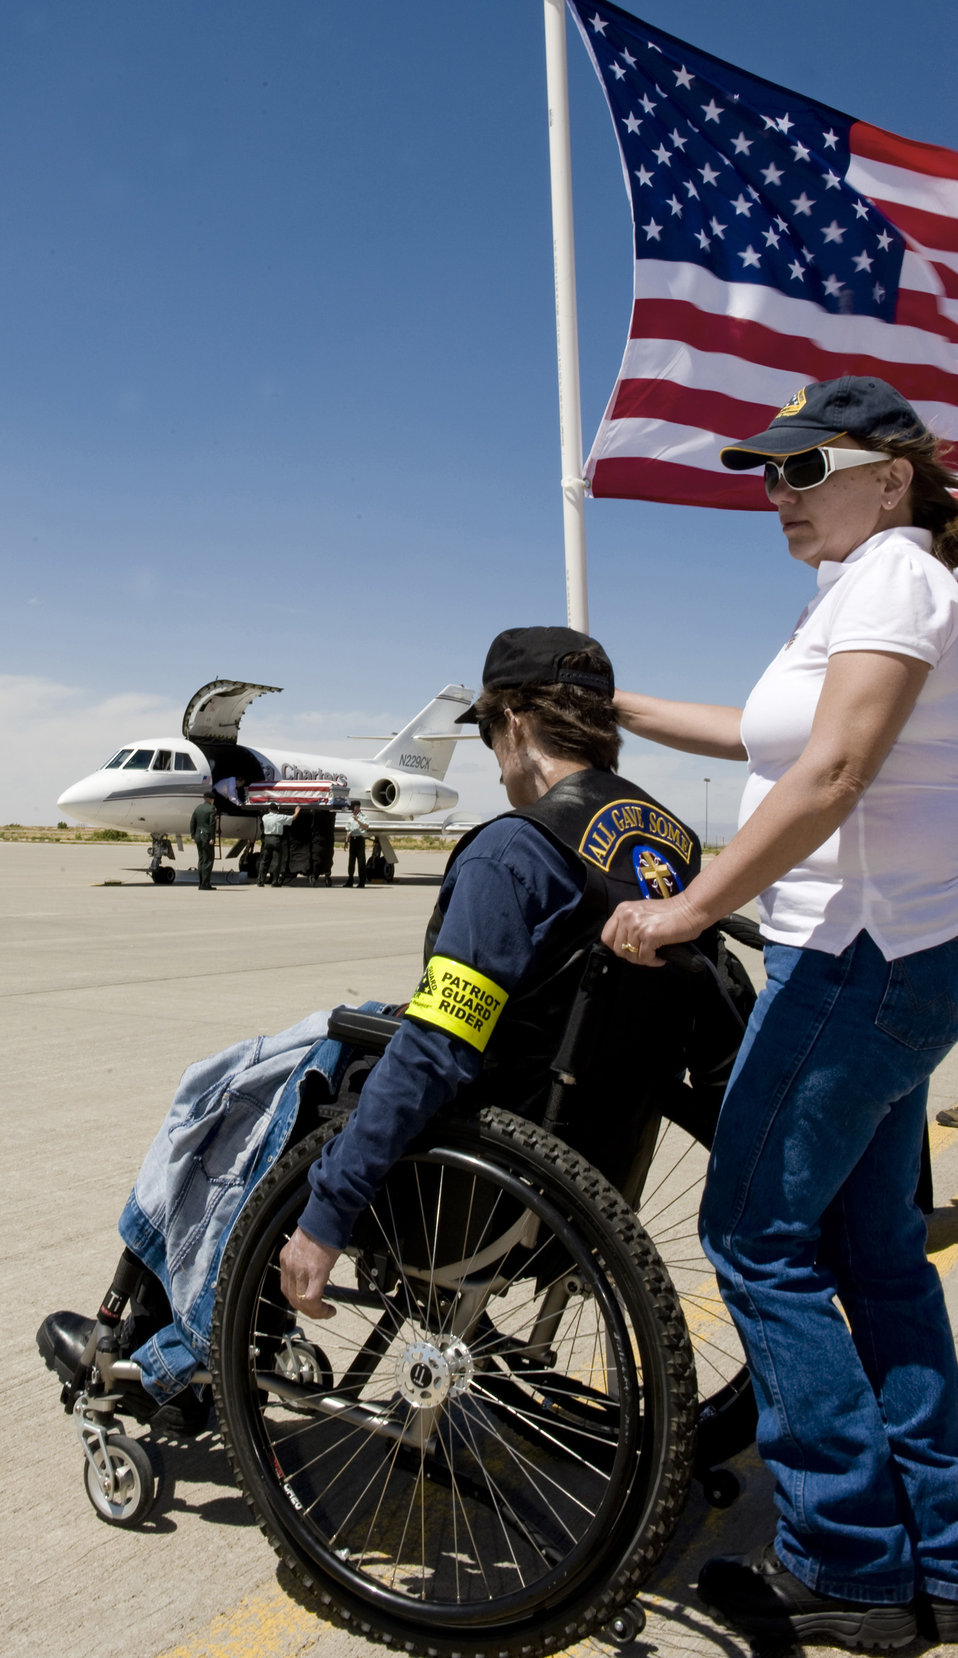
Holloman Airmen honor fallen Soldier

A member of the Patriot Guard Riders pays his final respects June 11 as the casket of fallen Army Spc. Christopher M. Kurth arrives at Holloman Air Force Base, N.M. The Soldier was killed in a grenade attack June 4 near Kirkuk, Iraq. Specialist Kurth was a native of Alamogordo, N.M., and was stationed at Fort Hood, Texas.